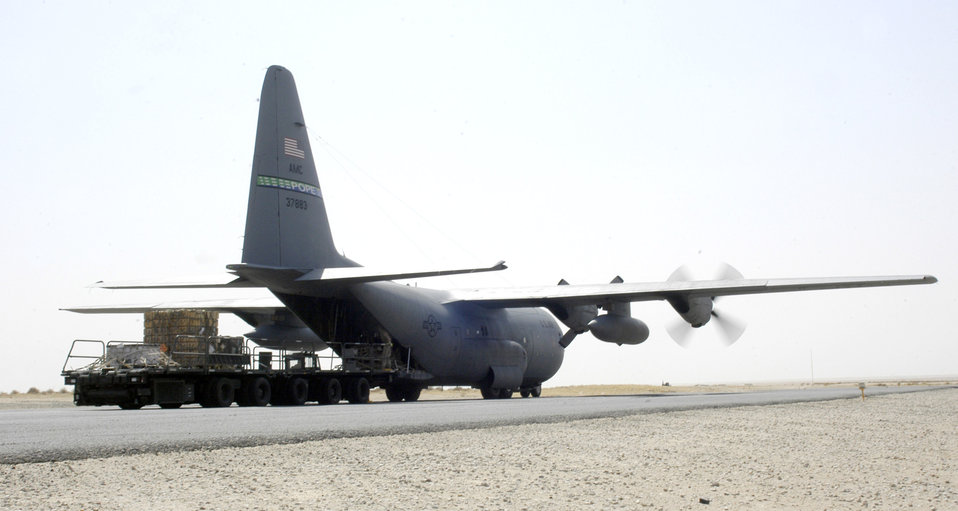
Cargo movement

Airmen from the 386th Expeditionary Logistics Readiness Squadron Aerial Port Flight conduct an engine running offload on a C-130 Hercules on Wednesday, July 19, at a forward operating base in Southwest Asia. The flight is responsible for receiving, accounting for and moving passengers and cargo in and out of the base. The aerial port flight moved more than 20,000 tons of cargo since the beginning of 2006, almost double what it moved in the first half of 2005.